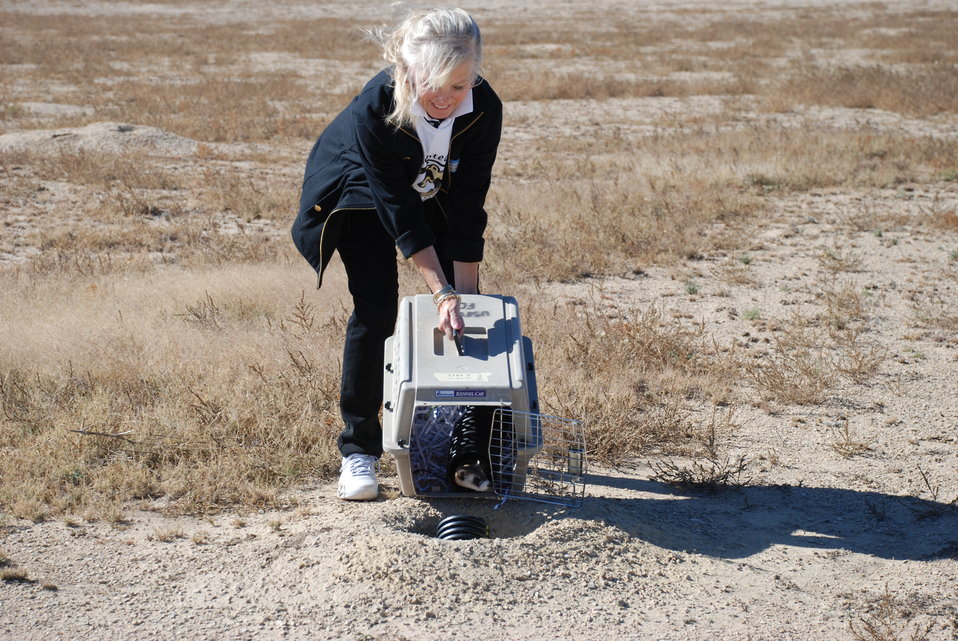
Black-footed Ferret Release

On Wednesday, October 30, 2013, thirty endangered black-footed ferrets were released onto cattle rancher Gary Walker's land, west of Pueblo, Colorado.

The release launched a potentially new way of preserving endangered species and was accomplished by way of a Safe Harbor Agreement (SHA). This SHA provides opportunities for private and Tribal landowners to volunteer their lands for reintroductions of this endangered species without affecting their land-use activities beyond mutually agreed-upon measures. It also extends these assurances to surrounding non-participating lands and other landowner interests. This SHA will be an important step in promoting the recovery of this iconic species.